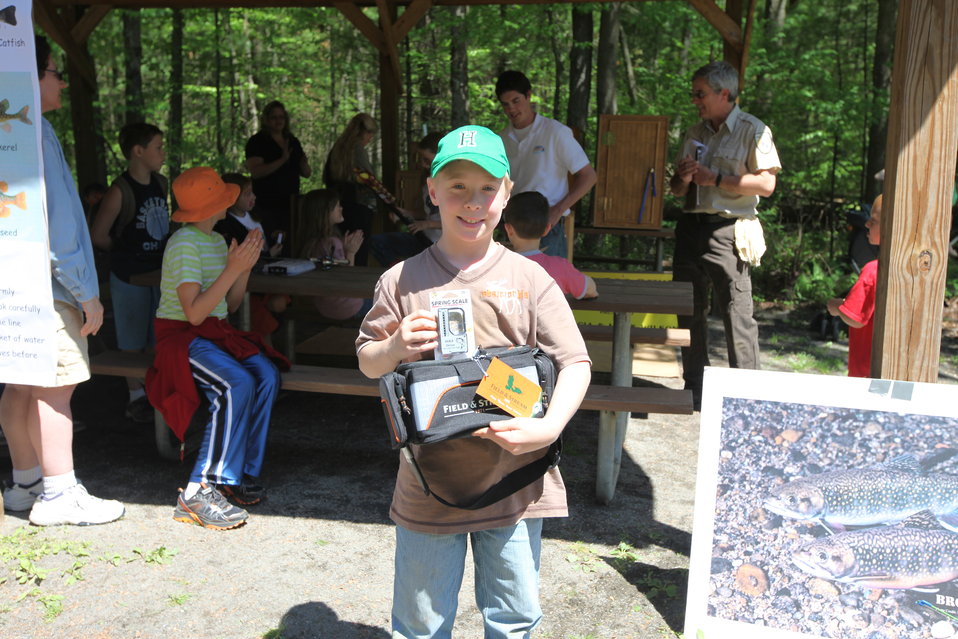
Youth Fishing Derby 2012

Megan Nagel/USFWS